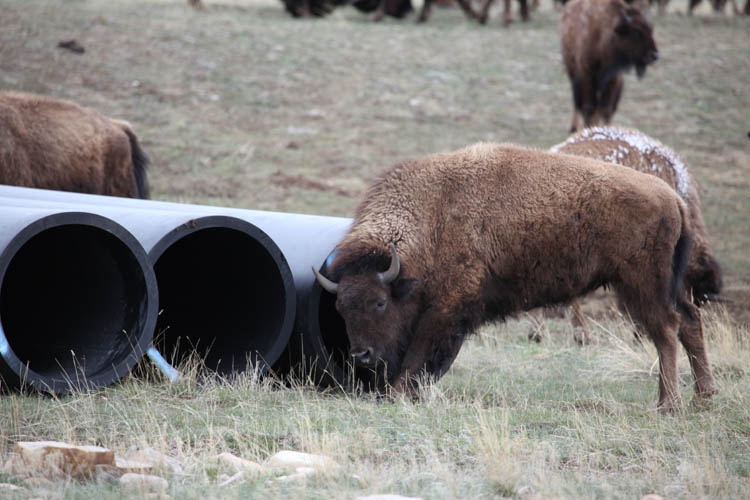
Bison on the National Elk Refuge

A bison investigates a section of pipeline that would later be installed as part of an American Recovery and Reinvestment Act (ARRA) project. The ARRA project significantly expanded the National Elk Refuge's irrigation system.